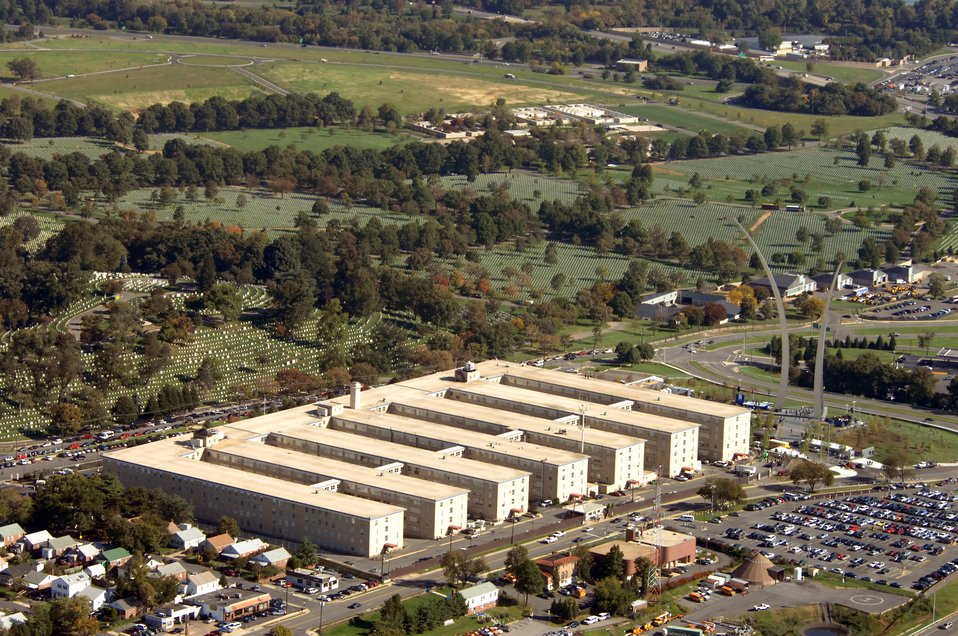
SecAF commemorates Navy Annex history

View over the U.S. Navy Annex, showing the completed U.S. Air Force memorial dedicated on Saturday, October 14, 2006.